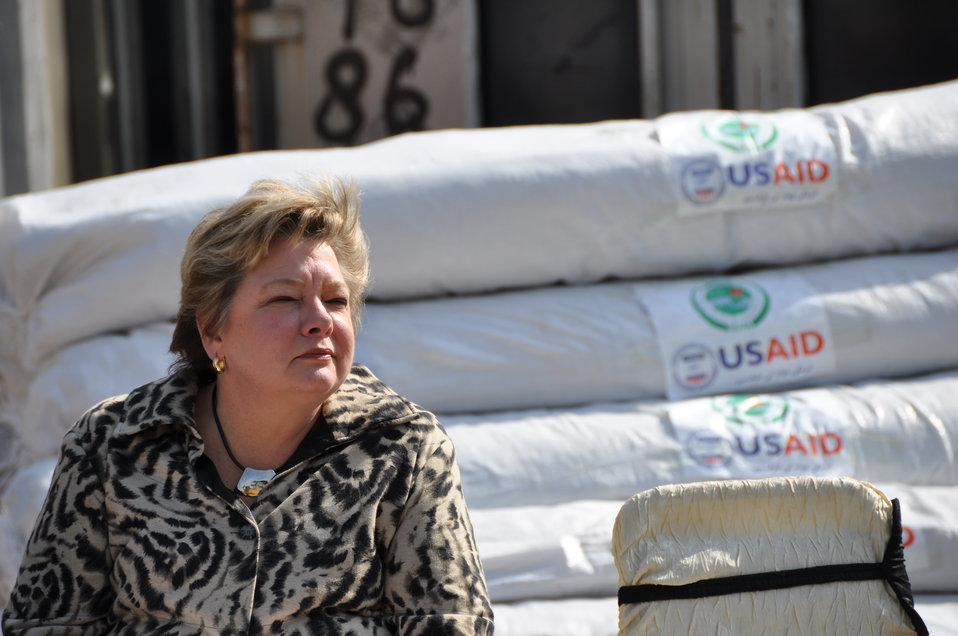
USAID Deputy Mission Director Karen Freeman stands before the tents and looks on during the handover of the 858 tents that the U.S. Government has provided to NDMA. The project helped plan and coordinate delivery of assistance during the 2010 and 2011.

For more information on the U.S. assistance related to the 2010 and 2011, please see

www.youtube.com/user/USAIDPakistan?feature=guide#p/u/4/-K...
www.youtube.com/user/USAIDPakistan?feature=guide#p/u/5/JG...
www.youtube.com/user/USAIDPakistan?feature=guide#p/u/7/nh...
www.youtube.com/user/USAIDPakistan?feature=guide#p/u/8/Jr...
www.youtube.com/user/USAIDPakistan?feature=guide#p/u/9/gZ...
www.youtube.com/user/USAIDPakistan?feature=guide#p/u/12/q...
www.youtube.com/user/USAIDPakistan?feature=guide#p/u/20/v...

Or Visit USAID
pakistan.usaid.gov

Check our videos and photos on YouTube and Flickr:
www.youtube.com/user/USAIDPakistan
www.flickr.com/photos/usaid pakistan